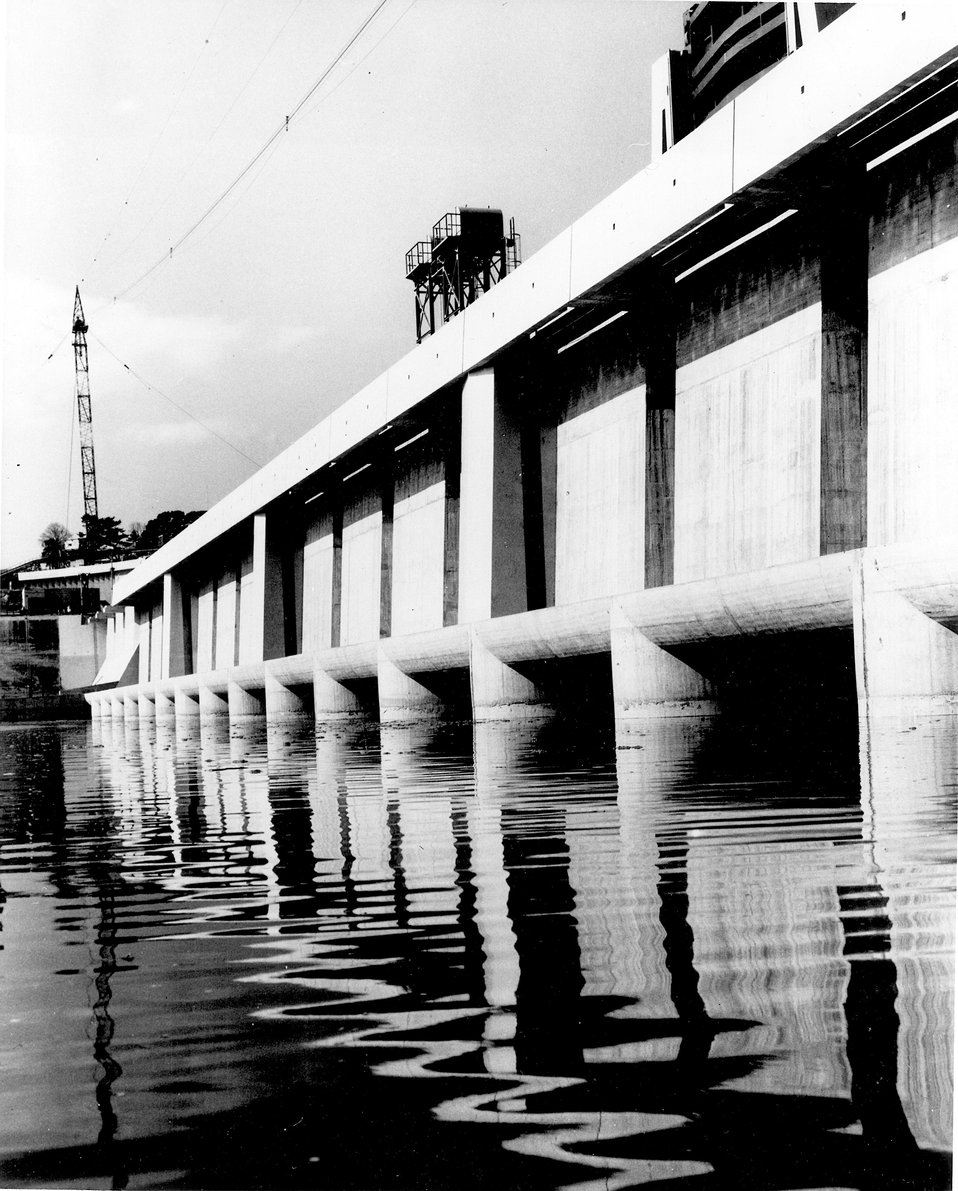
The tide which rushes up the Rance estuary on the northern coast of Brittany is one of the highest in the wold, reaching 13 and a half meters. c. 1978